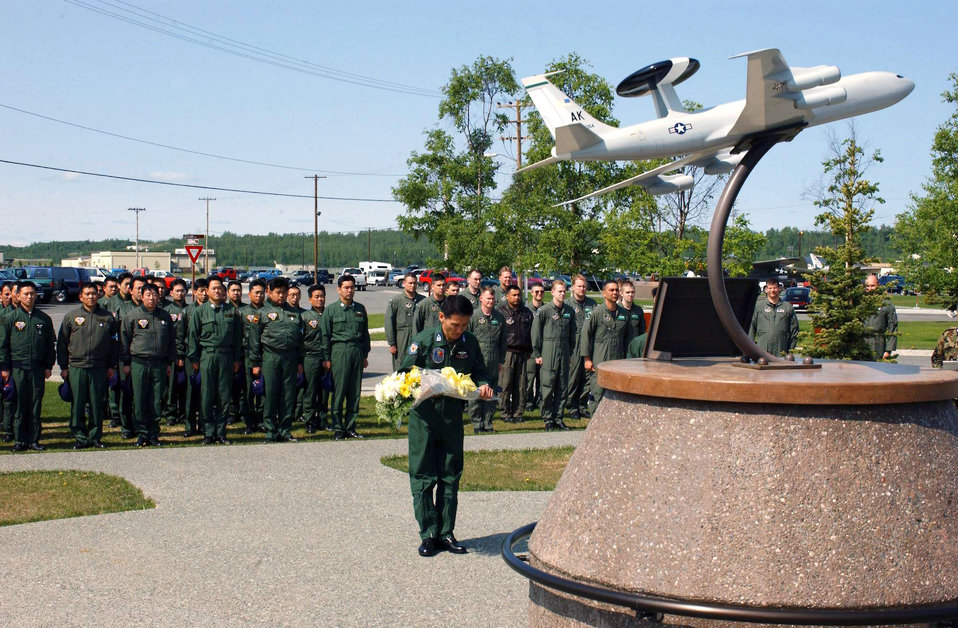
Yukla memorial

ELMENDORF AIR FORCE BASE, Alaska -- Japanese Col. Moritaka Noguchi lays a bouquet of flowers at the Yukla Memorial here during a ceremony May 28. The ceremony honored 24 U.S. and Canadian servicemembers who lost their lives Sept. 22, 1995, when an E-3 Sentry crashed while taking off from the base. Japanese air self-defense forces are here to participate in Cooperative Cope Thunder, a Pacific Air Forces-sponsored, air-combat training exercise set for June 5 to 20.